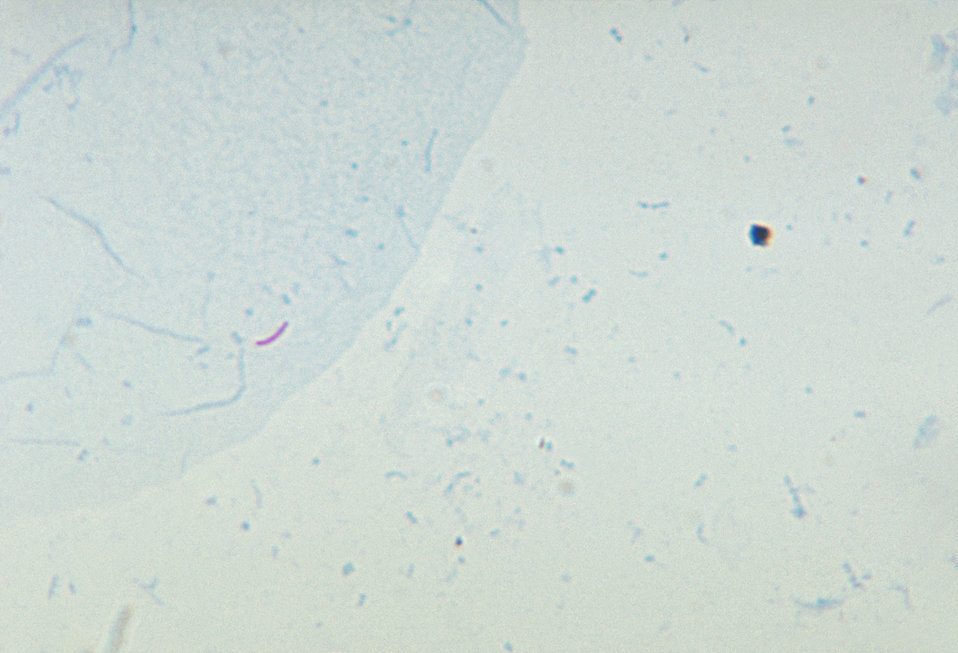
A photomicrograph of Mycobacterium tuberculosis in a sputum smear, using Ziehl-Neelsen acid-fast stain technique.